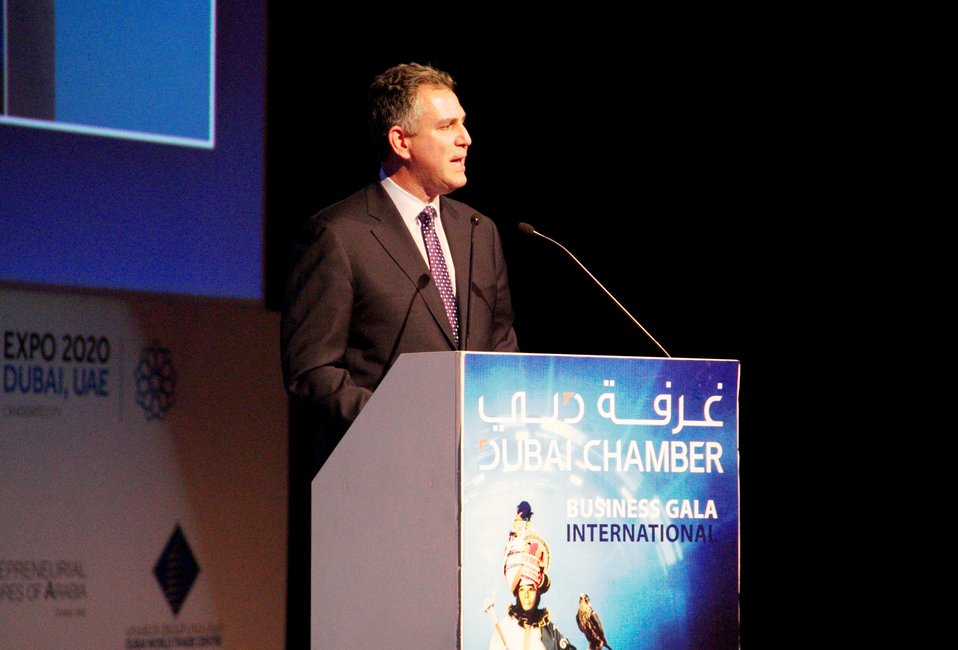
Under Secretary Sanchez Delivers Remarks at the Global Entrepreneurship Summit Gala Dinner

Under Secretary of Commerce for International Trade Francisco J. Sanchez delivers remarks at the Global Entrepreneurship Summit (GES) Gala Dinner in Dubai, United Arab Emirates, December 11, 2012.